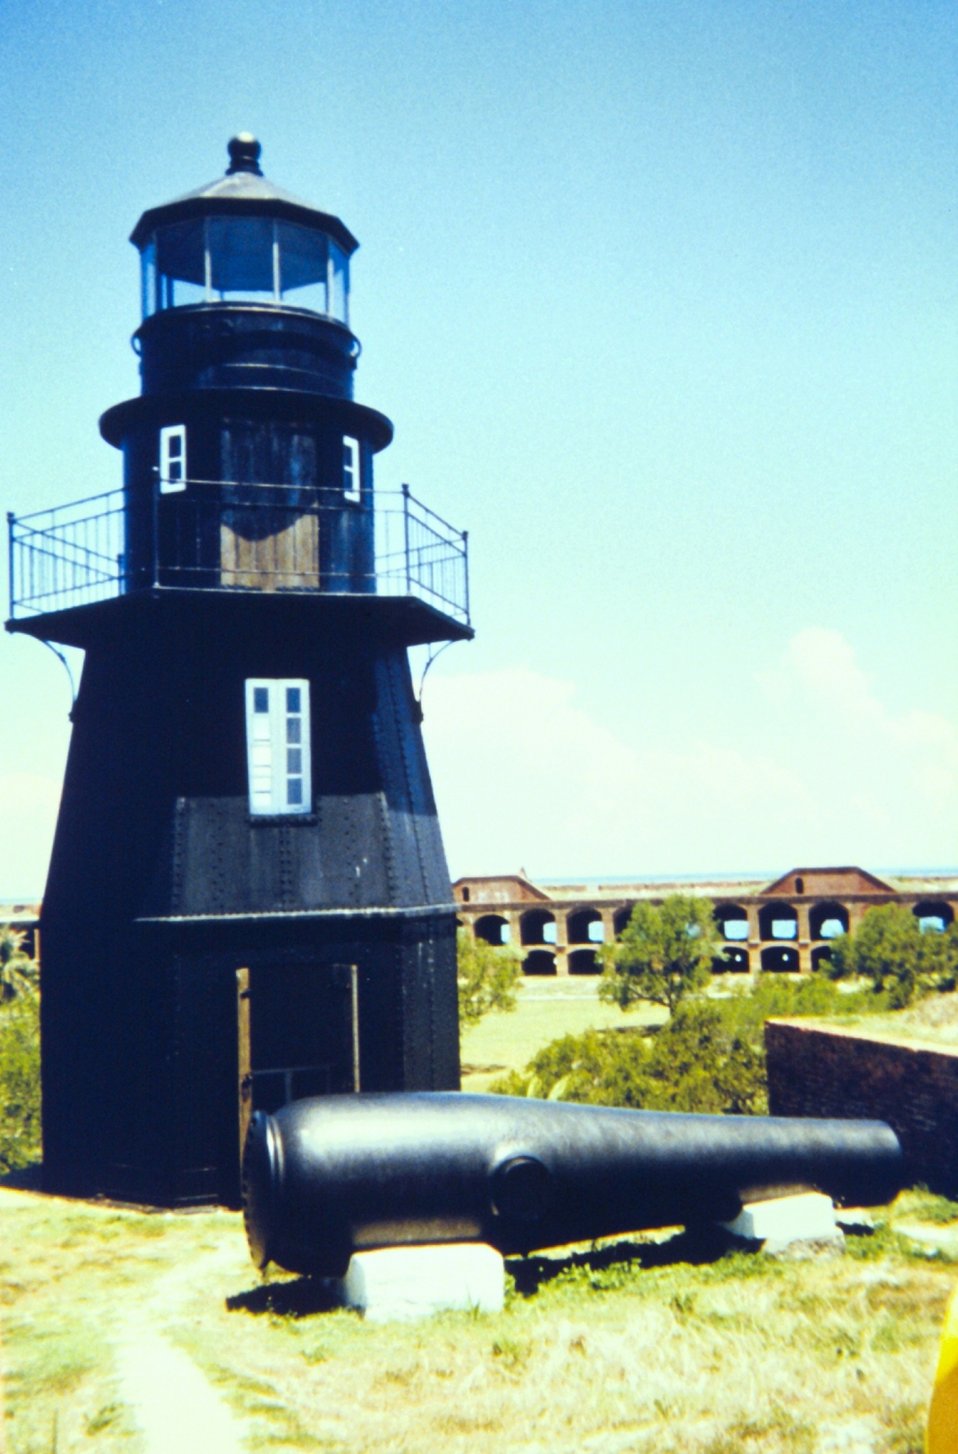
The lighthouse at Fort Jefferson with a Dahlgren cannon